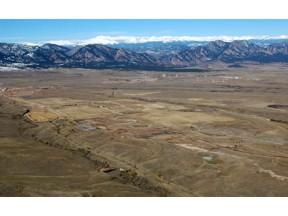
Rocky Flats Site

An aerial photo of the Rocky Flats Site located in Colorado after site cleanup operations were completed in 2006.